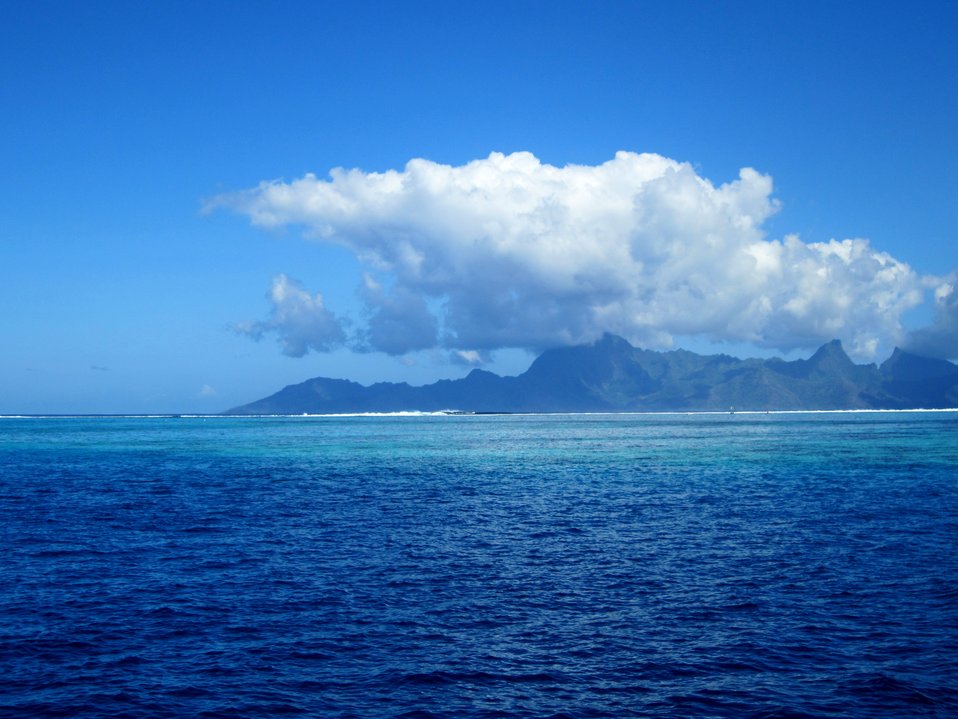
The fringing reef near Papeete. Notice the large breakers with spray flying off pounding into the reef.